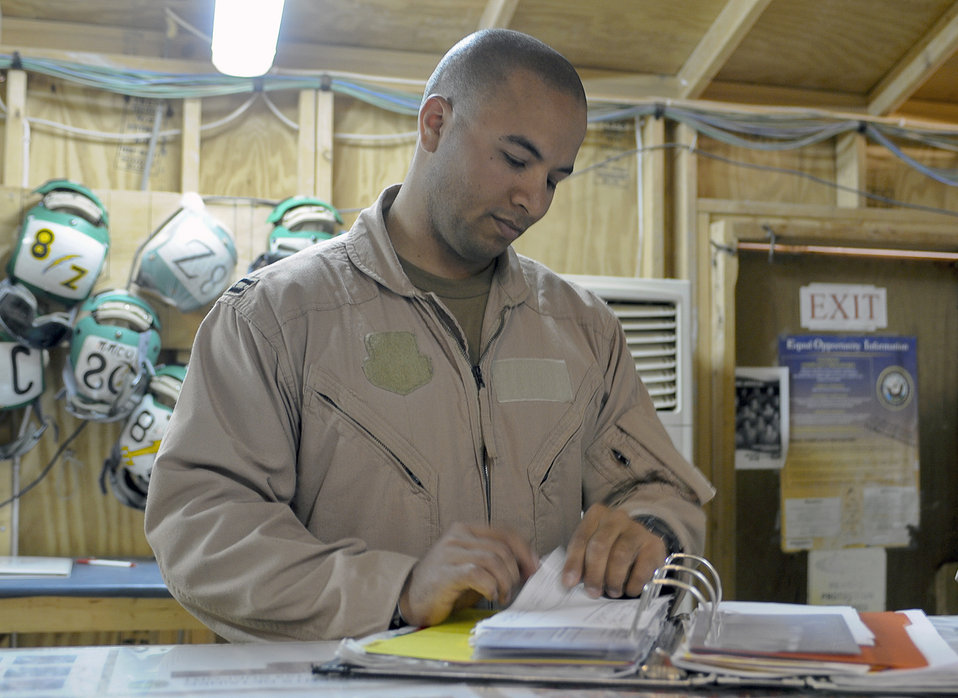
Air Force electronic warfare officers showcase joint effort in Iraq

Capt. Jason Constantine looks through the maintenance book prior to a mission launch April 29, 2010, at Al Asad Airfield, Iraq. Captain Constantine is one of four Air Force electronic warfare officers flying with Navy personnel on the A6B-Prowler to conduct aerial over watch operations for convoys at Al Asad. The Air Force officers are assigned to the 366th Fighter Wing at Mountain Home Air Force Base, Idaho, and work with their counterparts at Naval Air Station Whidbey Island, Wash., in the 388th Electronic Combat Squadron. Captain Constantine is an electronic warfare officer with the Navy's VAQ133 Electronic Attack Squadron.